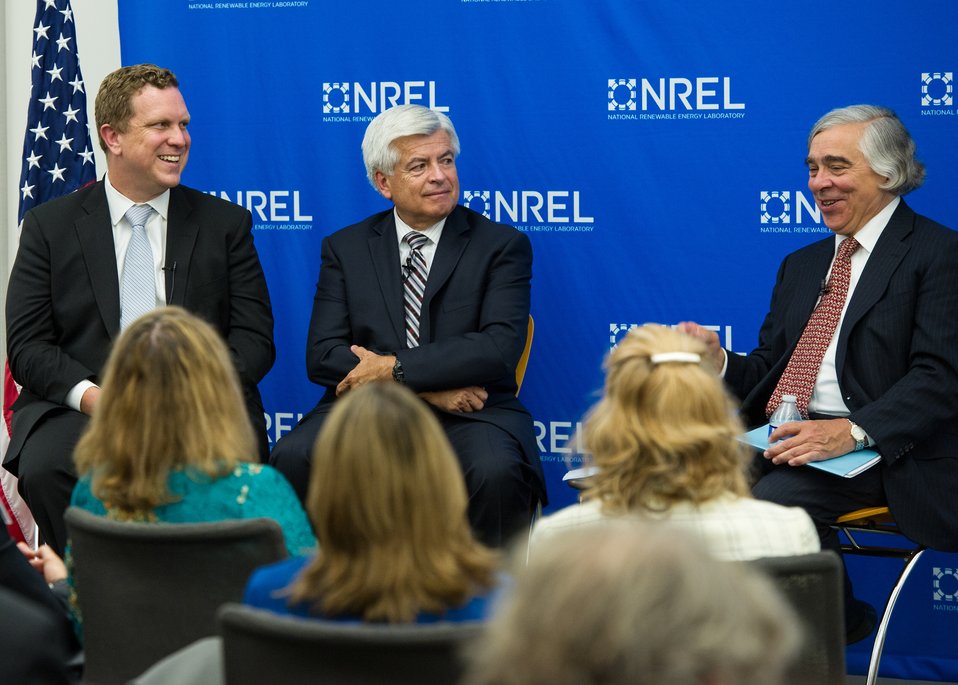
NREL TOWN HALL MEETING AT THE RESEARCH SUPPORT FACILITY (RSF) WITH DAVID DANIELSON, ASSISTANT SECRETARY FOR ENERGY EFFICIENCY AND RENEWABLE ENERGY, DAN AVIZU, NREL DIRECTOR AND ENERGY SECRETARY ERNEST MONIZ.